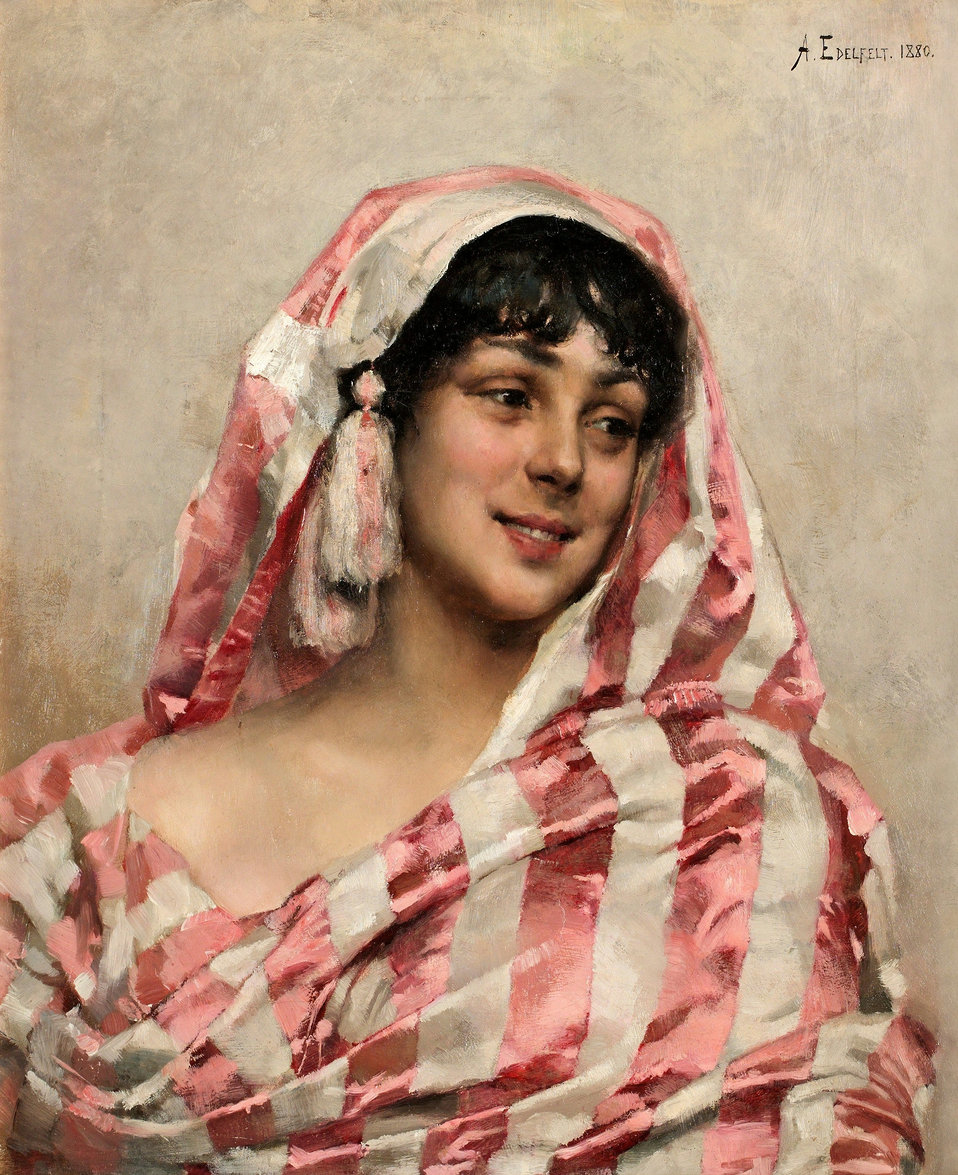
Albert Edelfelt - Portrait of a young woman